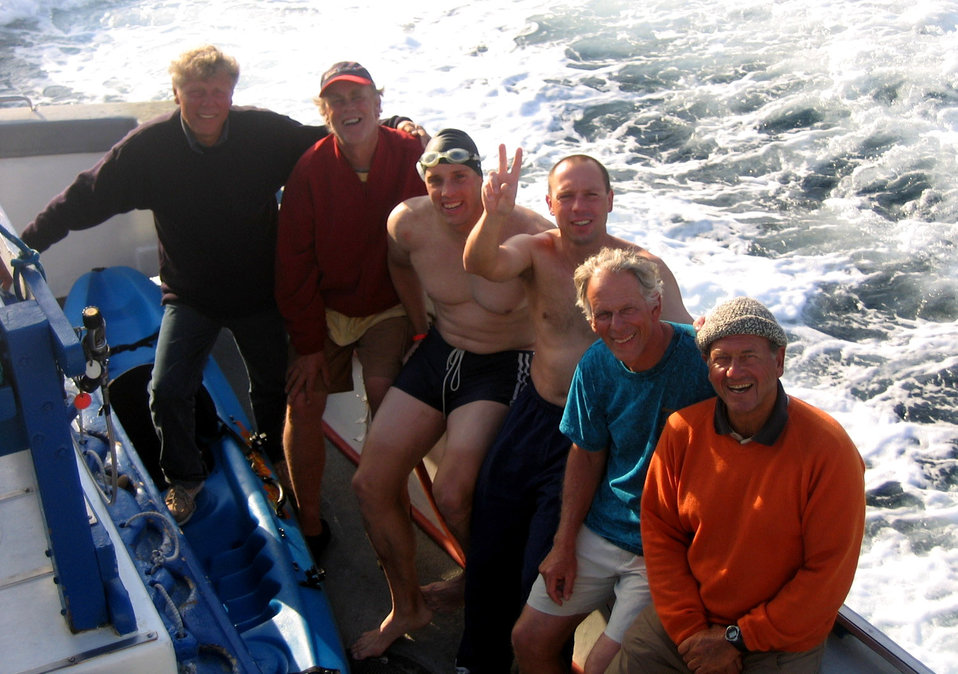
Professor swims into record book ... again

Following their long-distance relay swim Aug. 1, Lt. Col. Tim Lawrence (in swim cap) and Peter Zabel are flanked by, left to right, Peter's father Ernst, Lawrence's coach Rick Oerman and Santa BarbaraChannel Swimming Association observers Dean White and Emilio Casanueva. The two swimmers combined to swim from Santa Barbara Island to Los Angeles, a distance of 42 miles, in just over 31 hours to earn a spot in the Guinness Book of World Records. Colonel Lawrence is an astronautical engineering professor at the U.S. Air Force Academy.